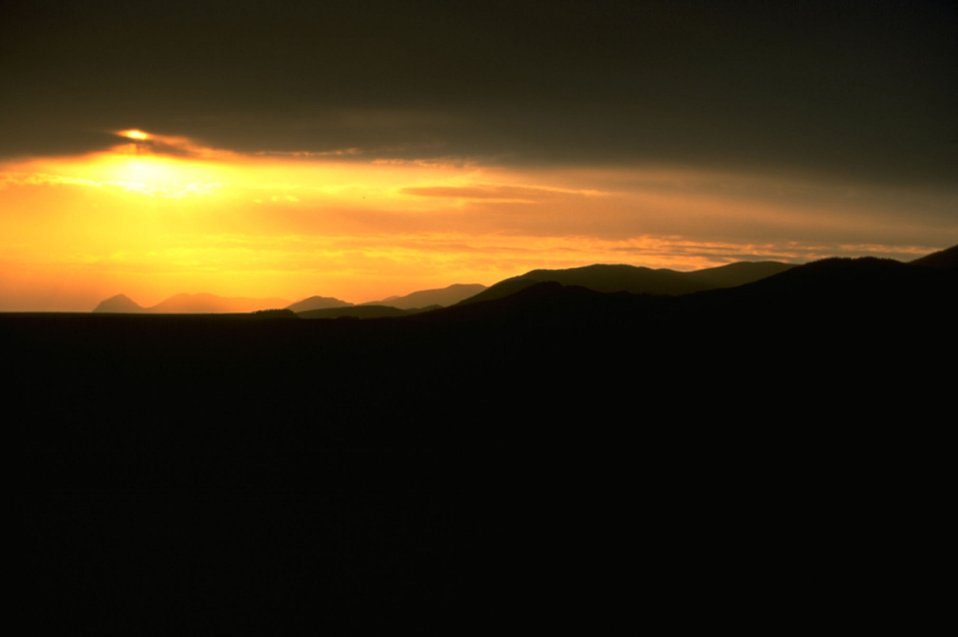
Sunset over the Missouri Breaks